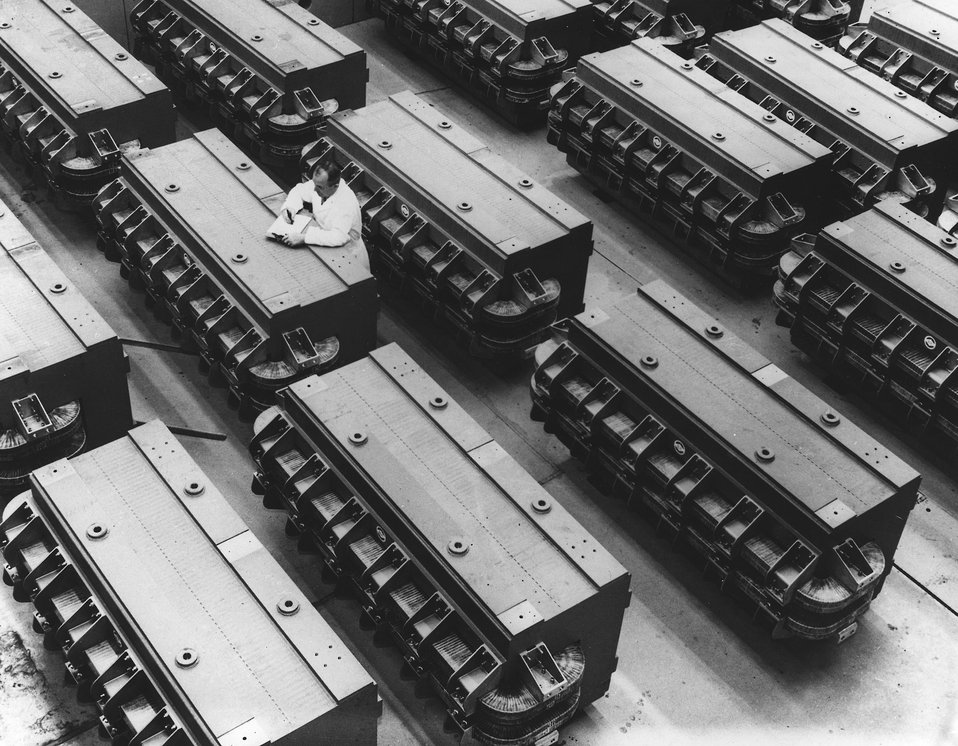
Some of the 240 magnet sections for the Alternating Gradient Synchrotron, assembled in the Target Building for testing, before installation in the 1/2 mile circular tunnel. c. 1960